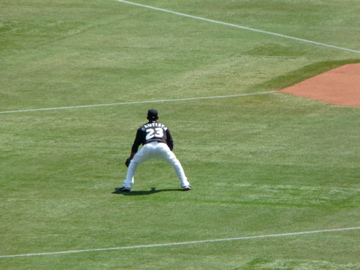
José Bautista
19:15, 6 September 2008 . . DinoZon . . 360×270 (49 KB)